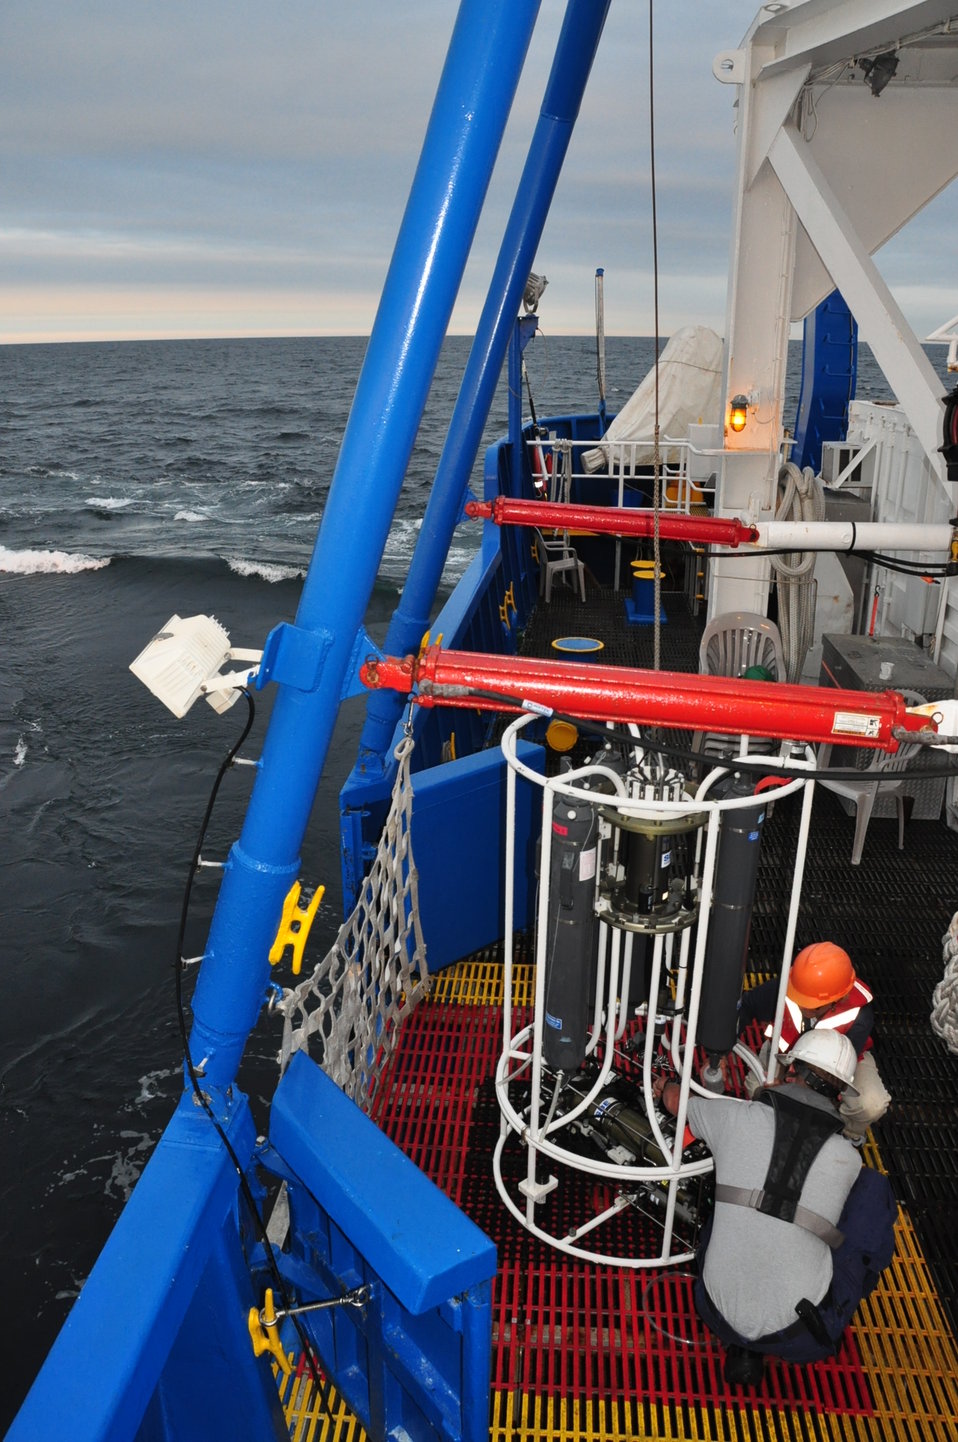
August 5, 2011 Preparing the rosette sampler as we spin on station